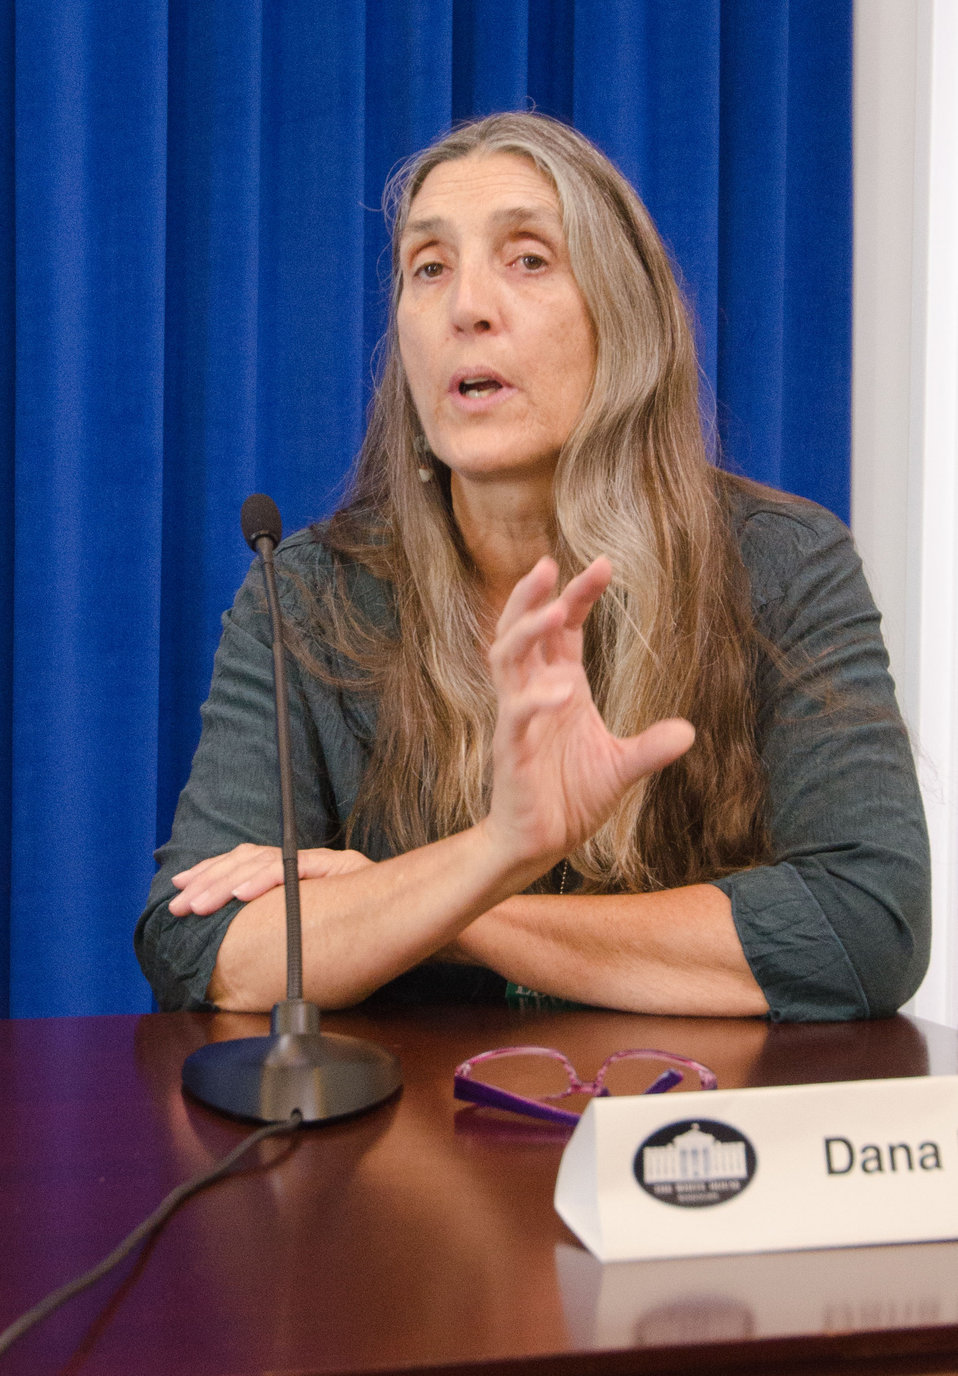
Mandela MarketPlace Executive Director Dana Harvey is one of eleven honorees recognized for their efforts to reduce hunger and increase food security in the U.S. and internationally at the White House Champions of Change Strengthening Food Security at Home and Abroad Event held at the White House on Thursday, September 6, 2012, in Washington, D.C..